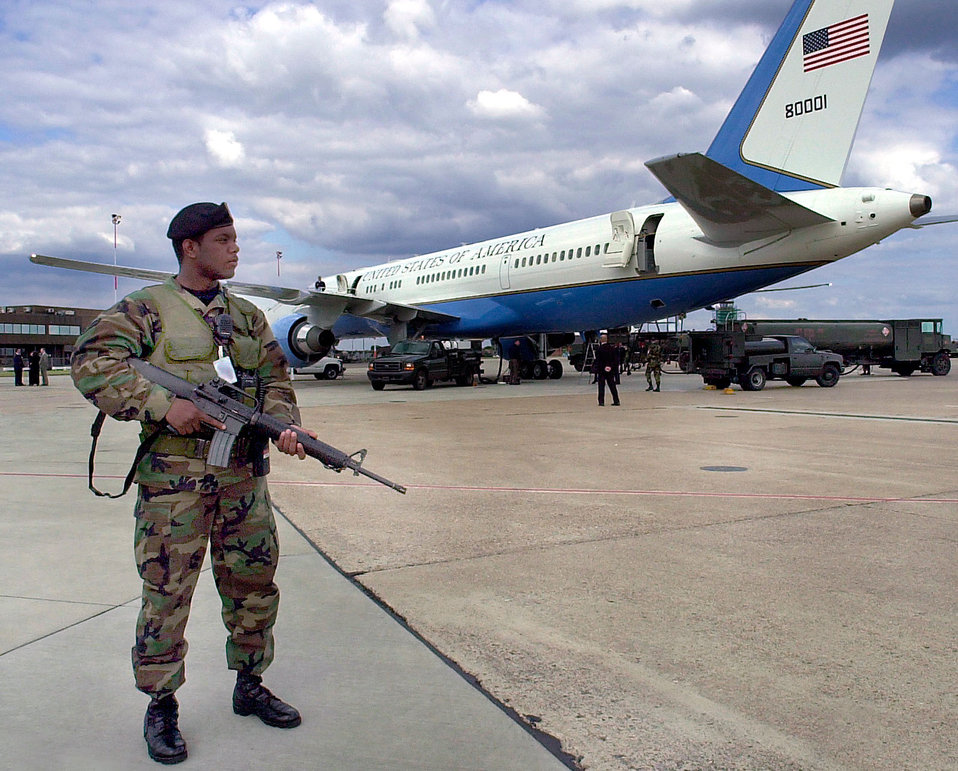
All secure

ROYAL AIR FORCE MILDENHALL, England -- Airman Rondale Alexander, 100th Security Forces Squadron, RAF Mildenhall, provides security for the U.S. presidential support team aircraft during a refueling stop on June 5, 2003.